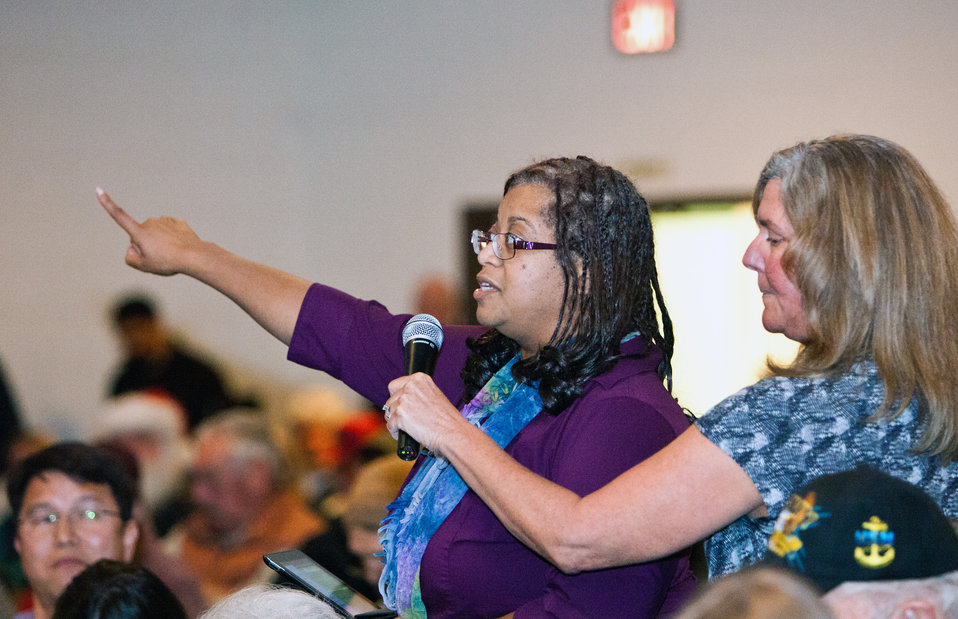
A representative of Humboldt State University asks Agriculture Secretary Tom Vilsack a question regarding broadband access in rural communities at a community forum in Weaverville, CA Dec. 10, 2012.